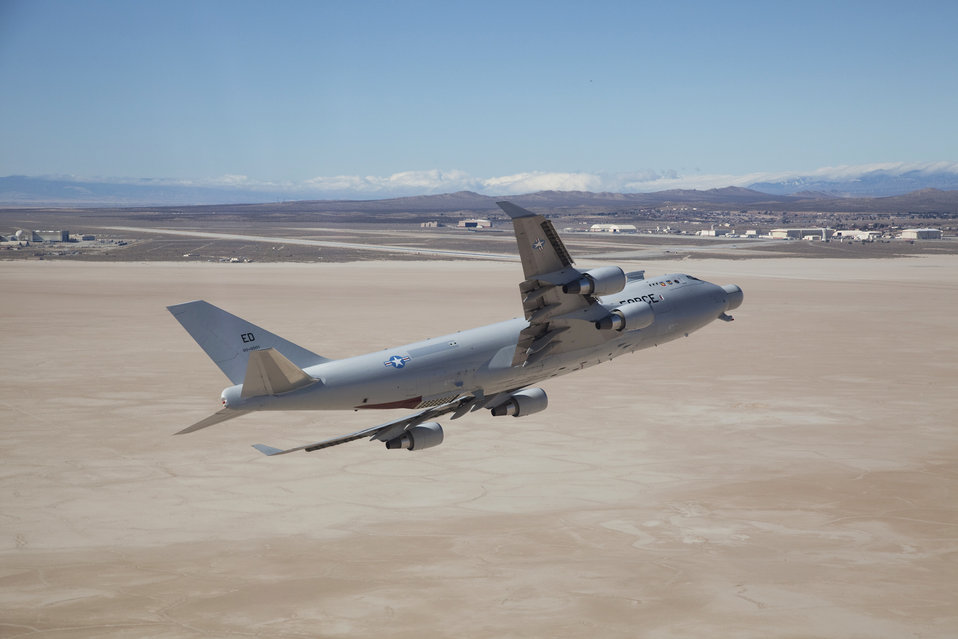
Airborne Laser Test Bed bids adieu to Edwards

The YAL-1A Airborne Laser Test Bed aircraft flies over Rogers Dry Lakebed for its final low approach over Edwards Air Force Base, Calif., before taking a ferry flight to Davis-Monthan AFB, Ariz., Feb. 14, 2012. The ALTB will be processed into storage at the Air Force’s Aerospace Maintenance and Regeneration Group in Arizona.